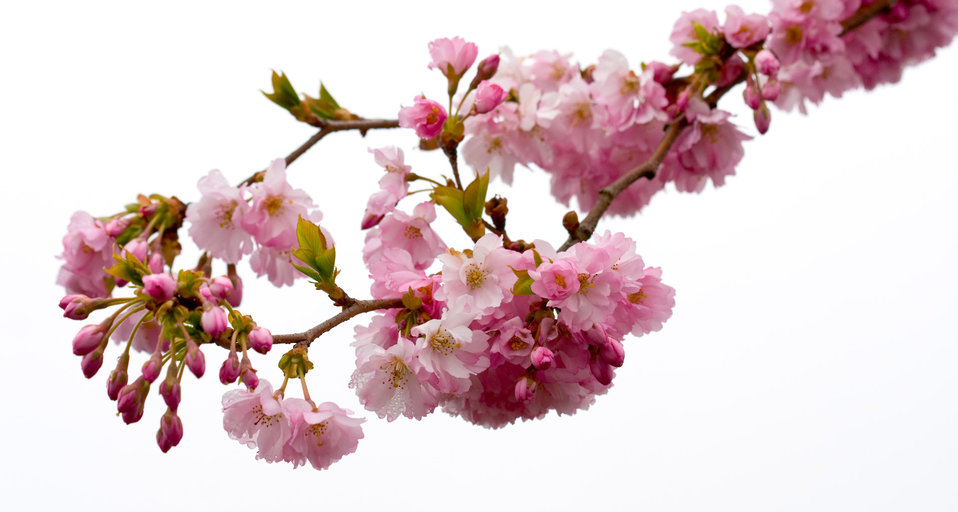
Pink blossom flowers isolated

Pink cherry blossom flowers isolated on white background macro.